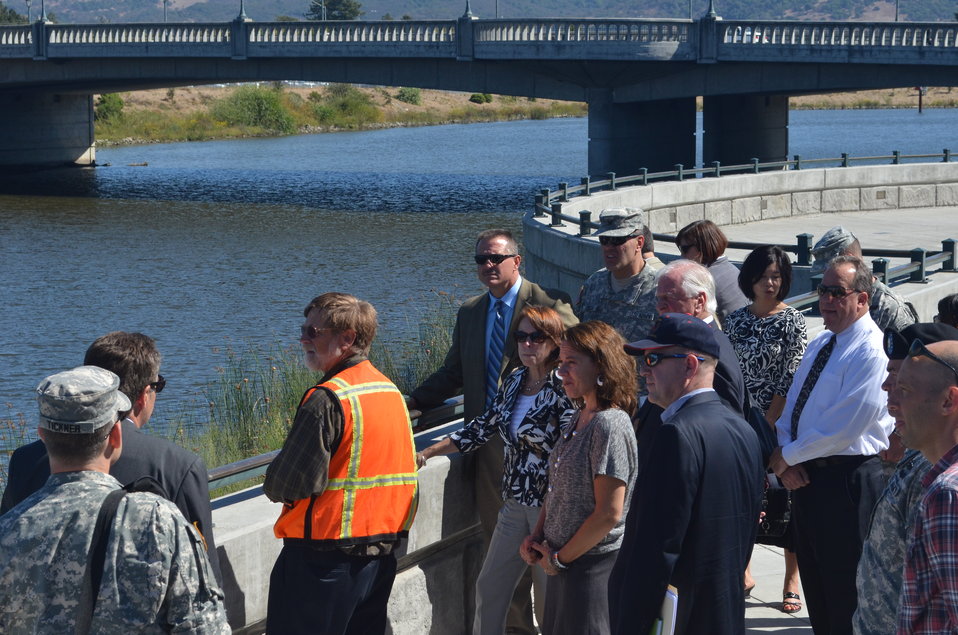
Tour of Napa flood risk reduction efforts

The group stands alongside the Napa River learning about the many unique features of this flood risk reduction project. (US Army Corps of Engineers/DeDe Cordell)